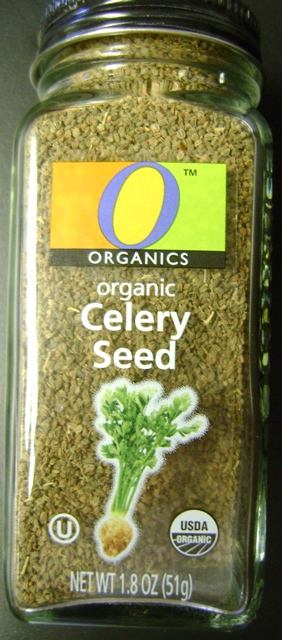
RECALLED - Organic Celery Seed

December 16, 2011 - Product Recall - B&M, Inc. Conducts A Voluntary Recall Of O Organics Organic Celery Seed Sold At Safeway Nationwide Due To Possible Salmonella Contamination.